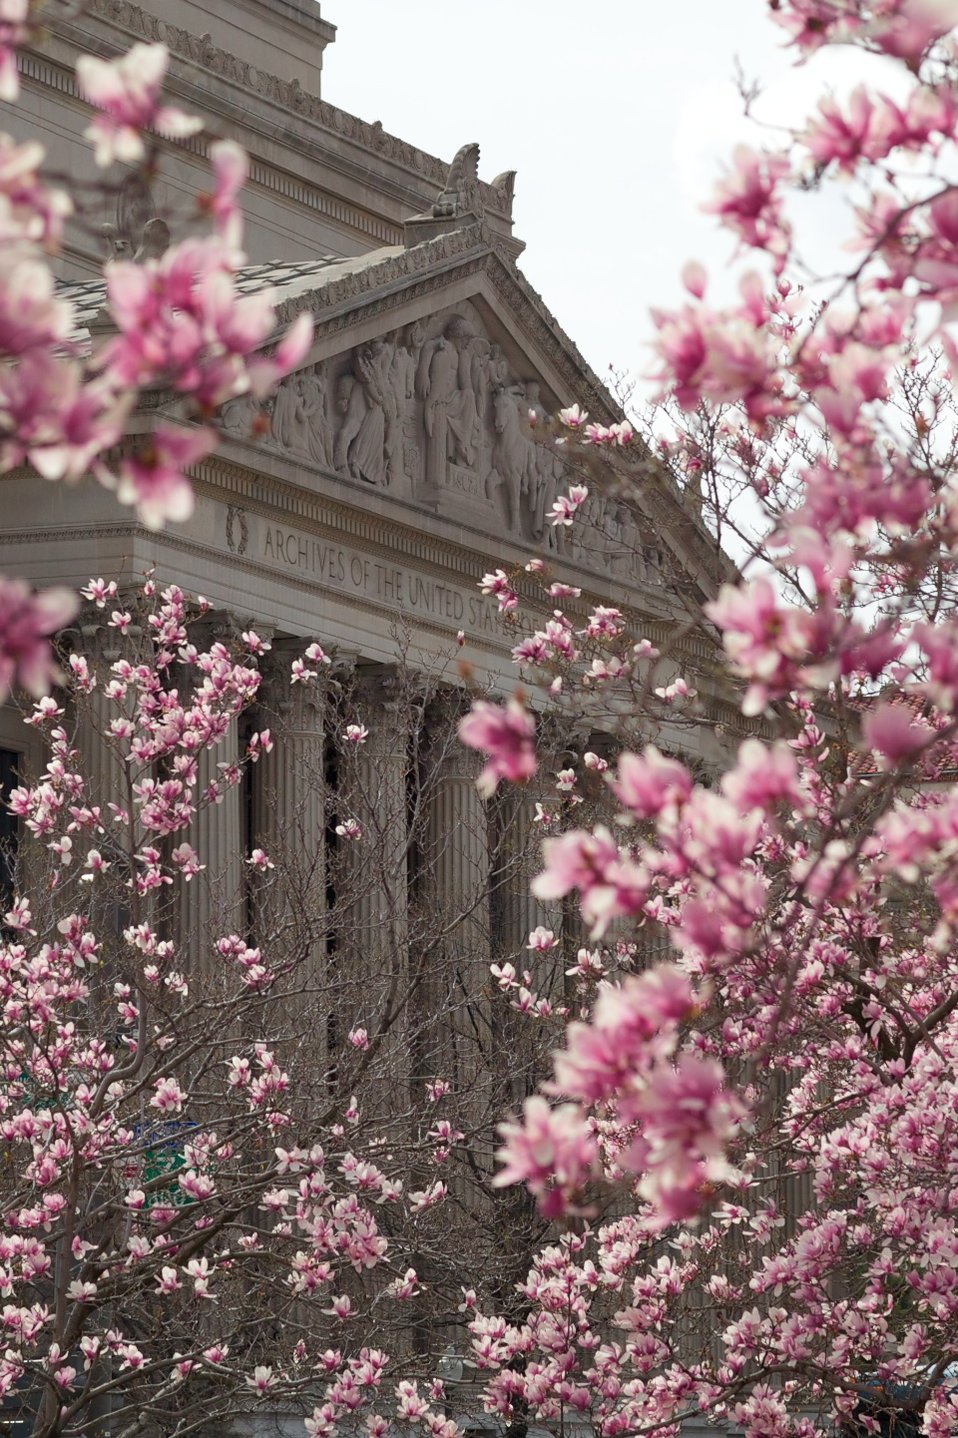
Blooming Magnolias in Indiana Plaza, catty-corner from the National Archives in Washington, DC